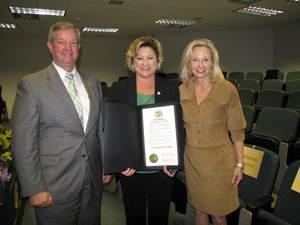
Drug Education Council’s NDFW summit, Thursday, January 31, 2013 in Mobile, Alabama. State and local officials held a prescription drug abuse summit to heighten awareness.